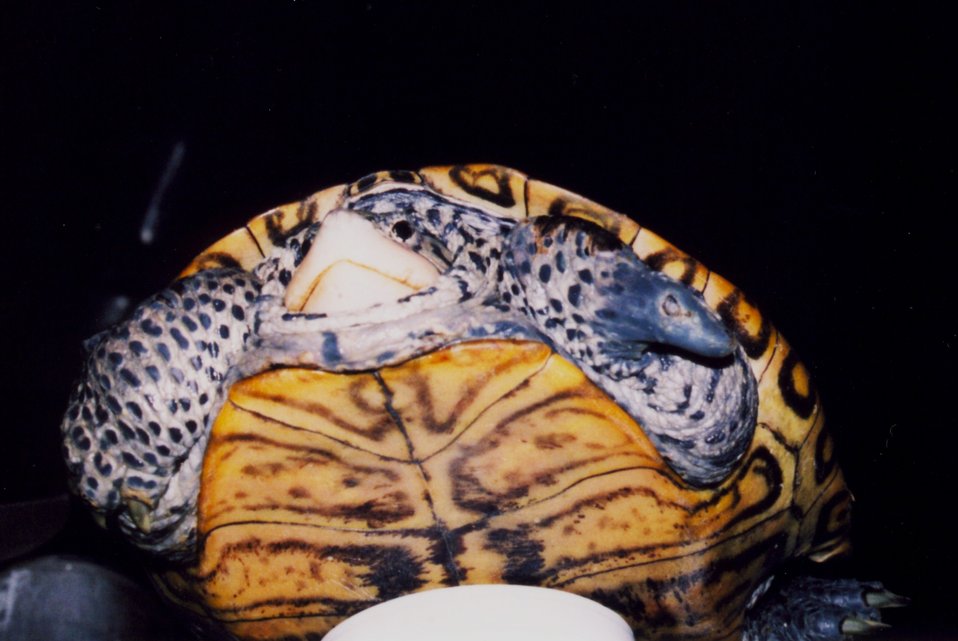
Terrapin with amputated foot from probable encounter with net